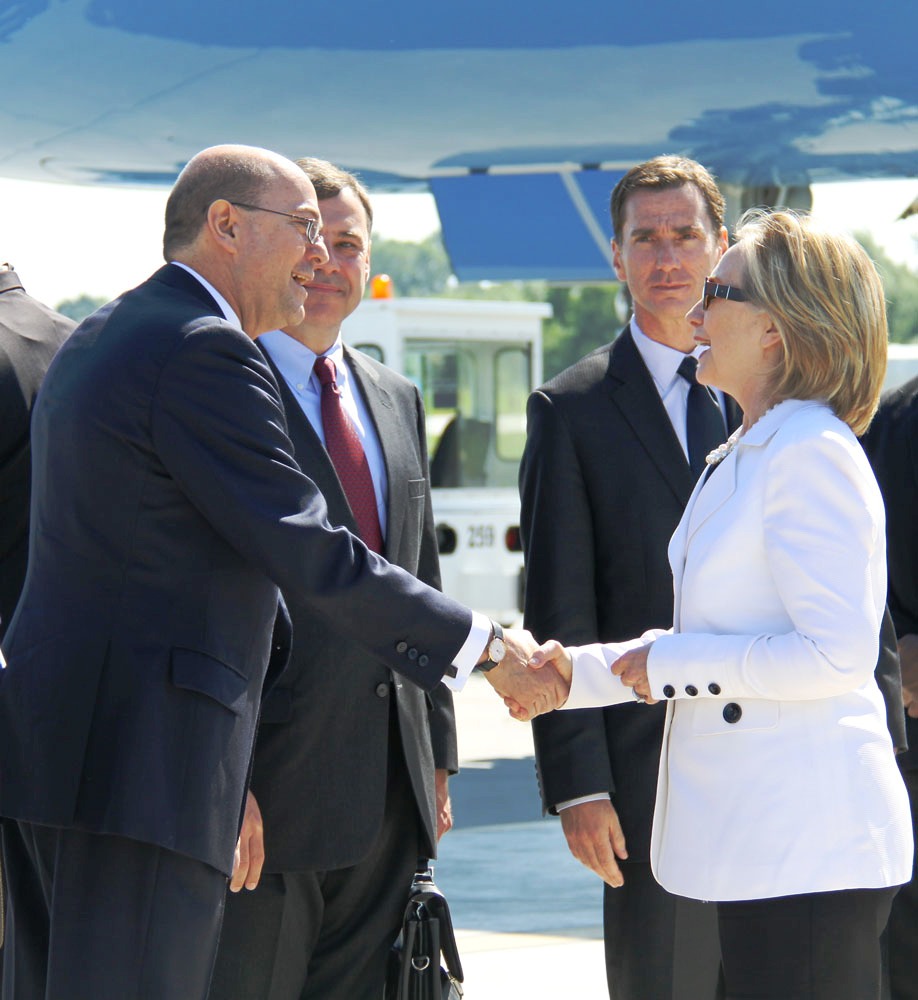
Secretary Clinton Is Greeted By Consul General of the American Consulate General in Krakow, Greenberg, U.S. Deputy Chief of Mission to Poland Heidt, and Ambassador Feinstein

U.S. Secretary of State Hillary Rodham Clinton is greeted at the airport by (left to right) Consul General of the American Consulate General in Krakow, Allen Greenberg; U.S. Deputy Chief of Mission to Poland William A. Heidt, and U.S. Ambassador to Poland Lee Feinstein arrives in Krakow, Poland, on July 3, 2010.